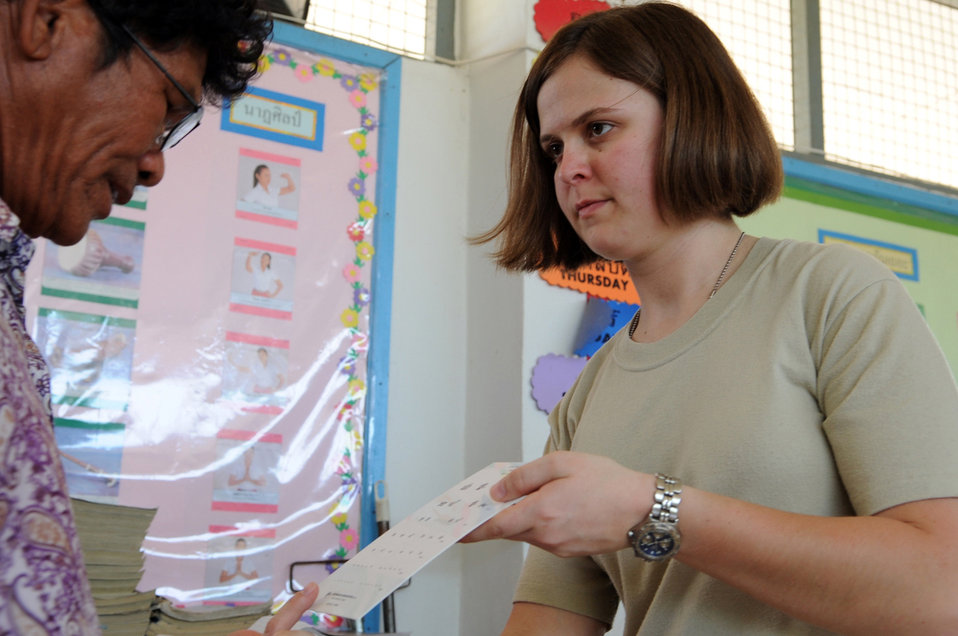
Airmen rewarded in Thailand exercise

Senior Airman Brittany Compton gives a Thai man a quick reading test to ensure he received the correct eyeglasses March, 4, 2010, at the Ban Nong Sroung School in Thailand. Airman Compton is a guard member from the 179th Medical Group at Mansfield, Ohio.